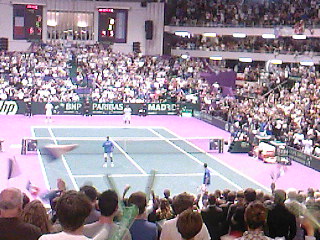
2010 Davis Cup semi-final France vs Argentina. Doubles match†: Cl√©ment-Llodra (winners, in blue) vs Schwank-Zeballos